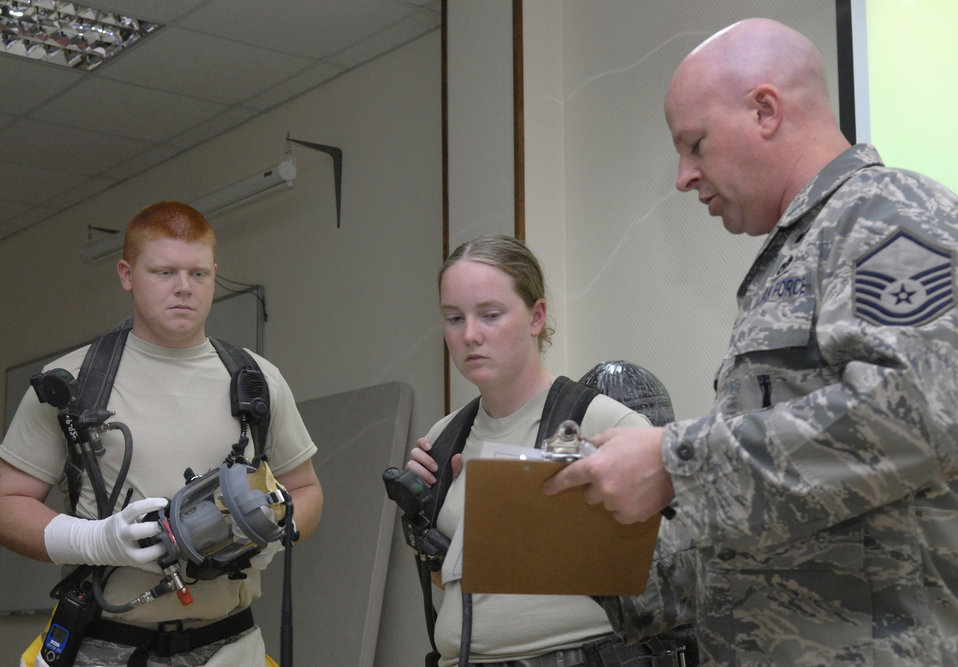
Who you gonna call?

Staff Sgt. Trevor Fettig and Senior Airman Carrie Gay get a final brief from Master Sgt. John Werner during a unit mission readiness exercise March 27 at an air base in Southwest Asia. Serving as a survey team, Sergeant Fettig and Airman Gay are preparing to put on protective suits and determine if a designated area is